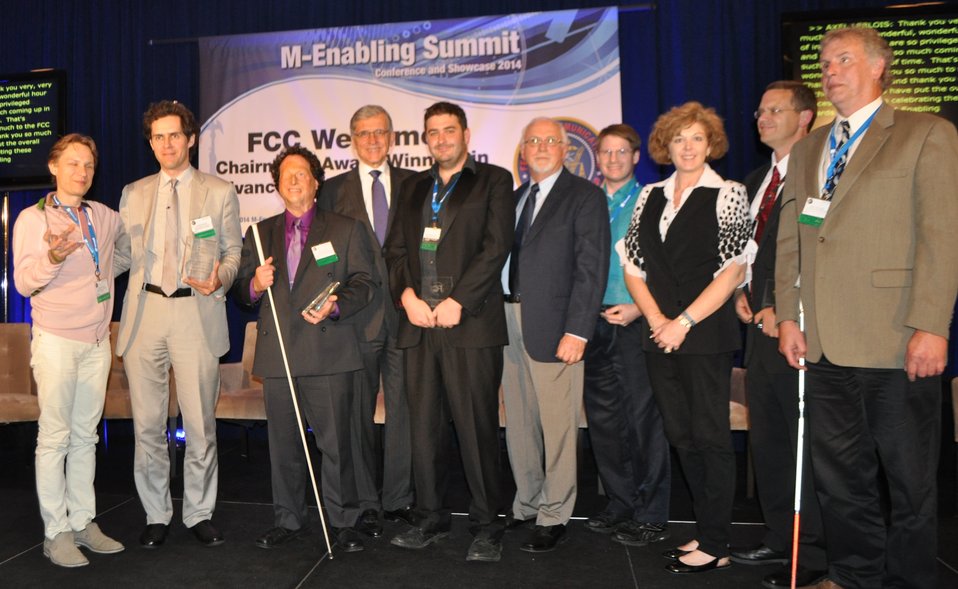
6.9.2014 Third Annual Chairman’s Awards for Advancement in Accessibility

Chairman Tom Wheeler with Award Recipients